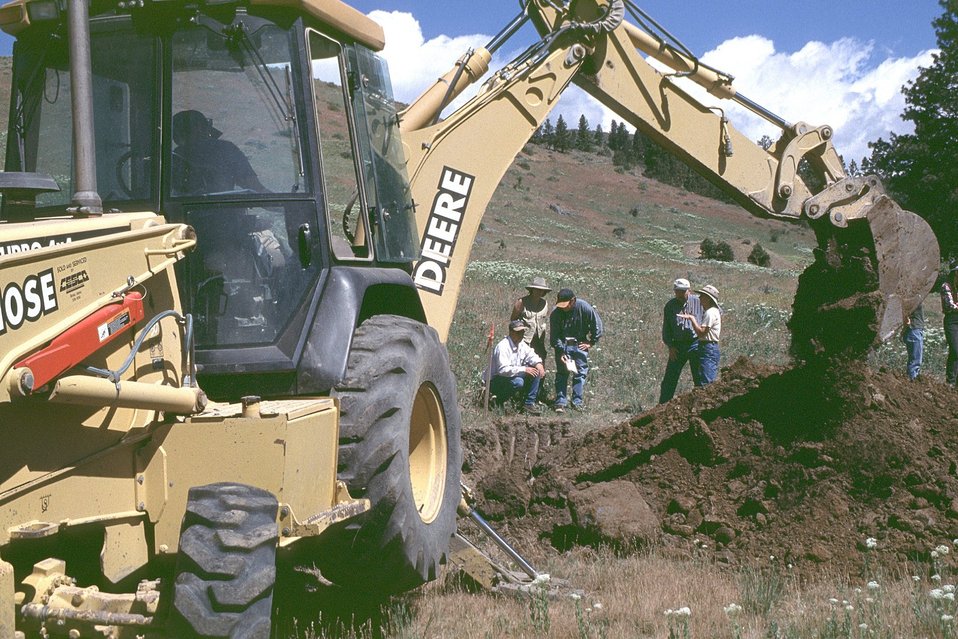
AML Poorman, Vale District, Oregon. Dave Porterfield leads a group of BLM employees digging test hole for a Repository.